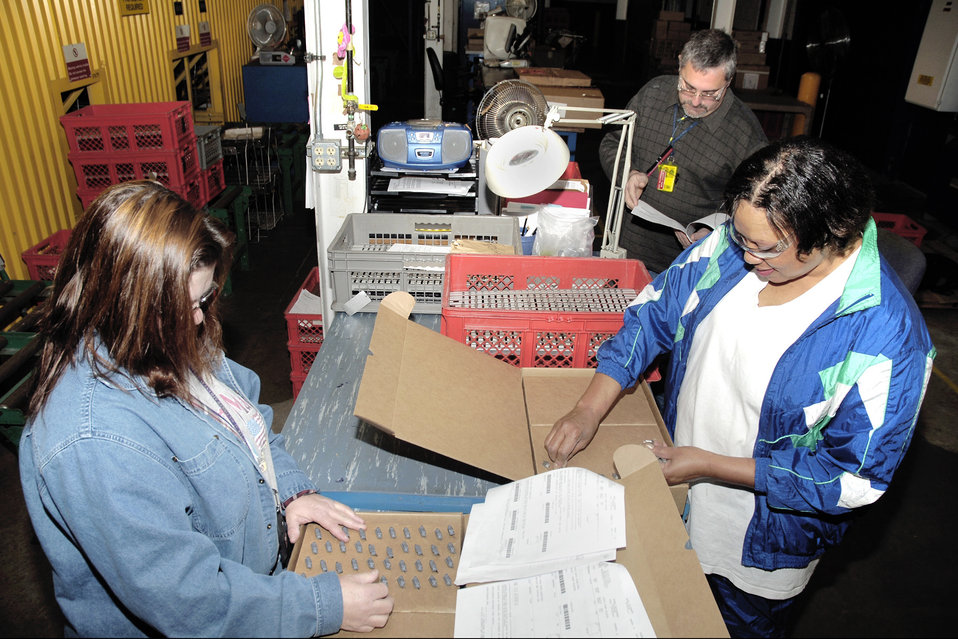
Transformation team scores F100 engine savings

Gary Richards, Clara Norwood, right, and Verla Brown assemble parts in the F100 weigh-in area for compressor blade kits.